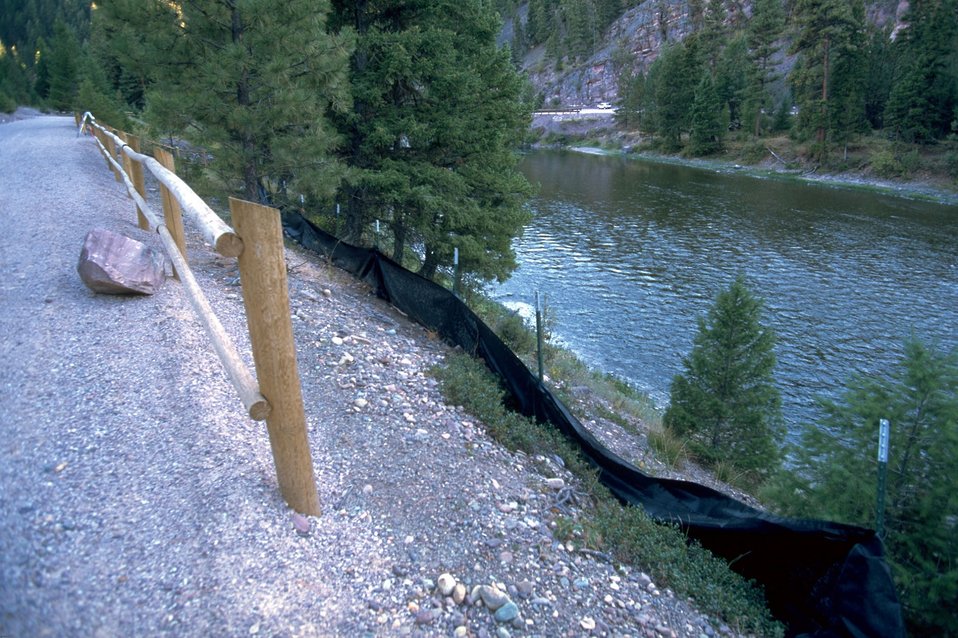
Blackfoot River-Whitaker Bridge boat launch showing sediment fence